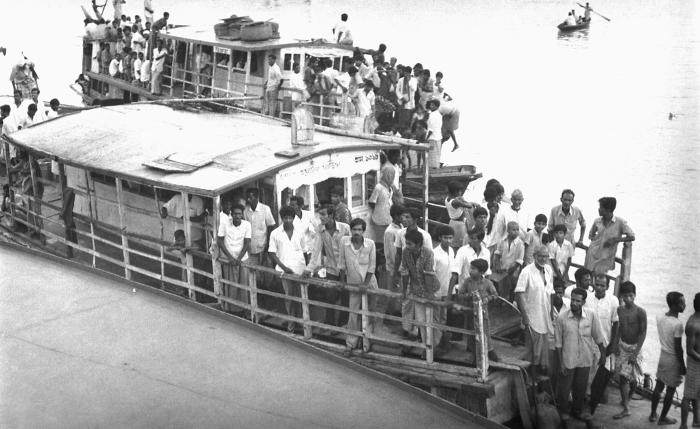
These Bangladeshi residents were aboard a launch that was transporting them along the country's waterways. The launch was used as the main mode of transportation in the riverine regions. This image was part of a series provided by Dr. Stan Foster, and captured by Pierre Claquin, M.D., B.A.C., who at the time was a member of the World Health Organization's Smallpox Eradication Program. It was part of a series photographed by former E.I.S. officer, Stanley O. Foster M.D., M.P.H., and was one of a series entitled 'The Story of One Smallpox Jeep', which depicted the travails faced by the jeep, and its occupants of public health practitioners, as they road through the Bangladesh countryside in an attempt to eradicate smallpox from the country.